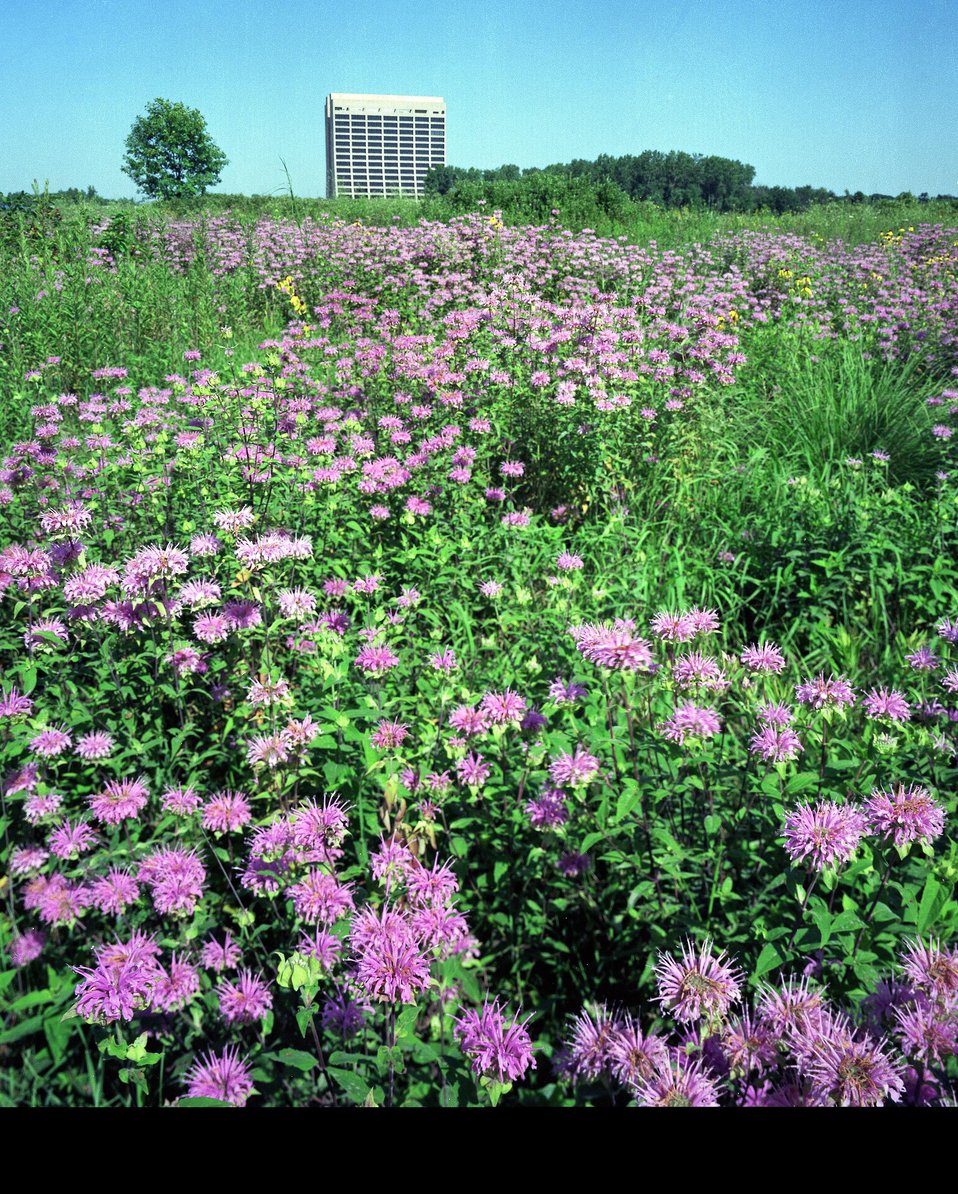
PRAIRIE PLANTS IN BLOOM AT FERMILAB WITH WILSON HALL IN THE BACKGROUND.

THE FERMI NATIONAL ACCELERATOR LABORATORY PRESERVES AND ENCOURAGES ITS PRAIRIE HERITAGE. FERMILAB ADVANCES THE UNDERSTANDING OF THE FUNDAMENTAL NATURE OF MATTER AND ENERGY BY PROVIDING LEADERSHIP AND RESOURCES FOR QUALIFIED RESEARCHERS TO CONDUCT BASIC RESEARCH AT THE FRONTIERS OF HIGH ENERGY PHYSICS AND RELATED DISCIPLINES.